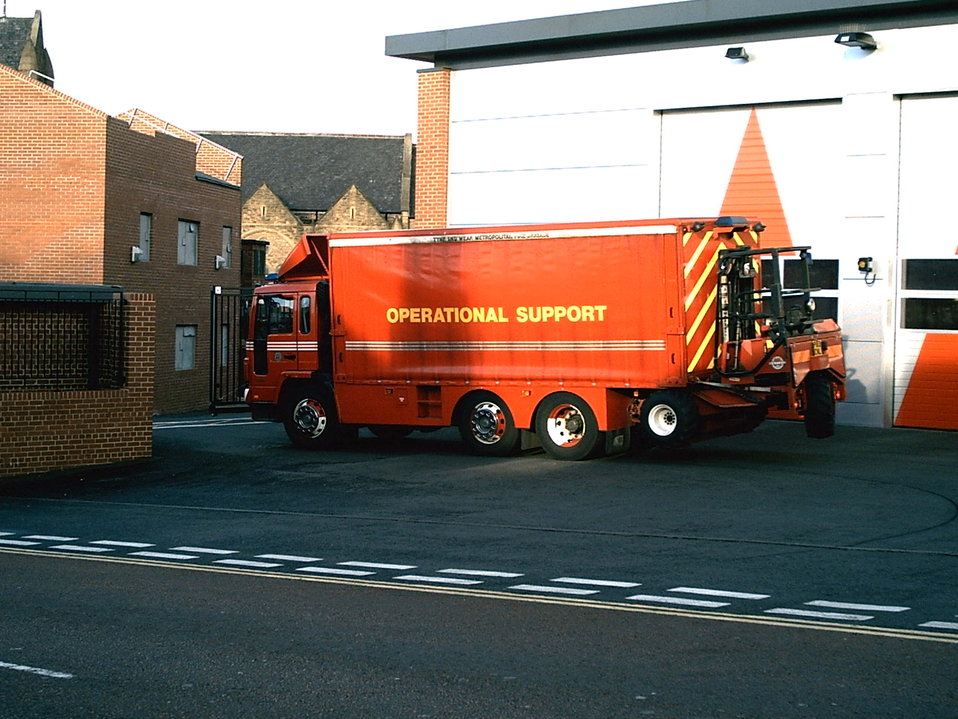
The Operational Support (Victor 05) of en:Tyne and Wear Fire and Rescue Service entering the home station of Gateshead (Victor) in Mid December 2006.